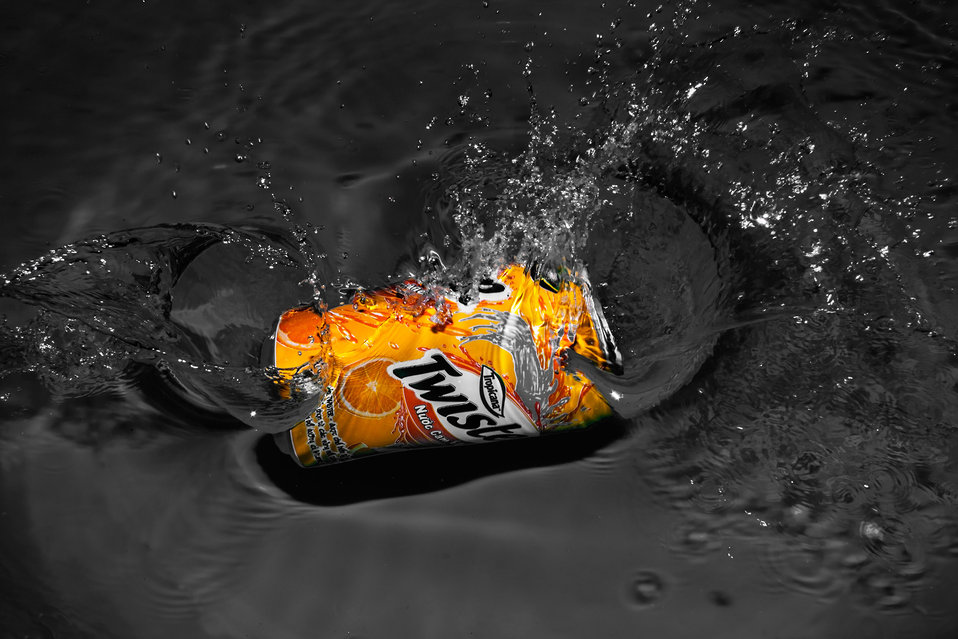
Twister

A twister cans falling into water bowl.